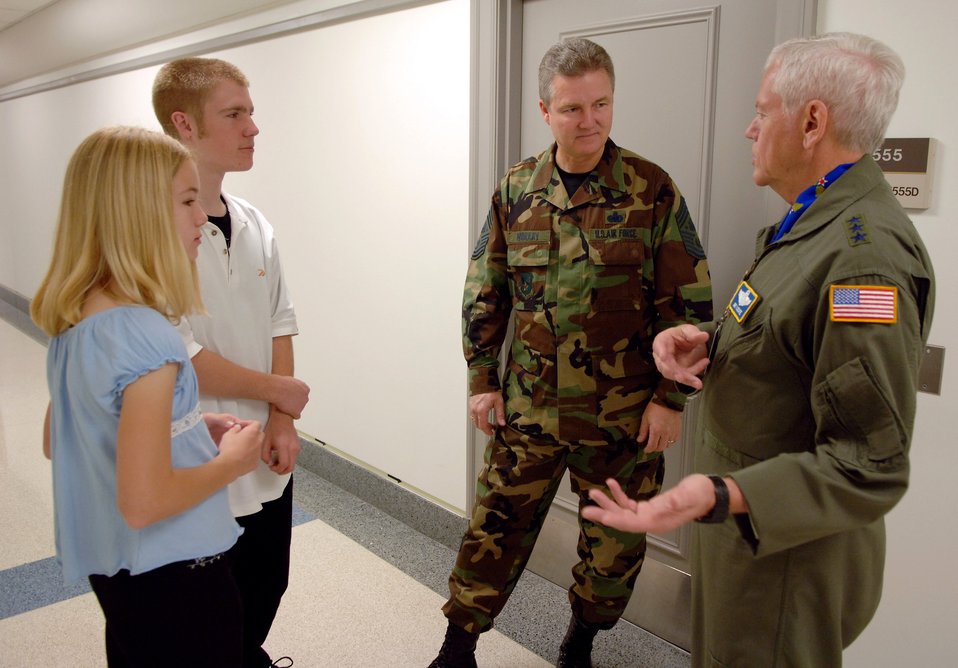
CMSAF Murray enjoys day at work with his children

Chief Master Sgt. of the Air Force Gerald R. Murray introduces his daughter Elizabeth, 10, and his son Stephen, 17, to Lt. Gen. Arthur J. Lichte outside his Pentagon office on Thursday, April 27, 2006. Chief Murray brought Elizabeth and Stephen to the Pentagon for the National Take Our Daughters and Sons to Work Day. General Lichte is the assistant vice chief of staff of the Air Force.